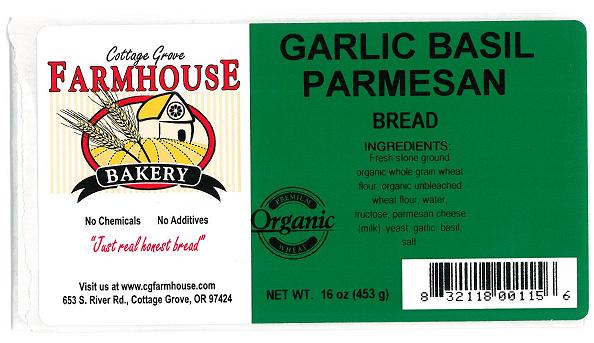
RECALLED - Bread

April 1, 2011 - Product Recall - Cottage Grove Farmhouse Bakery Issues Allergy Alert On Undeclared Pasteurized Egg White In Breads.